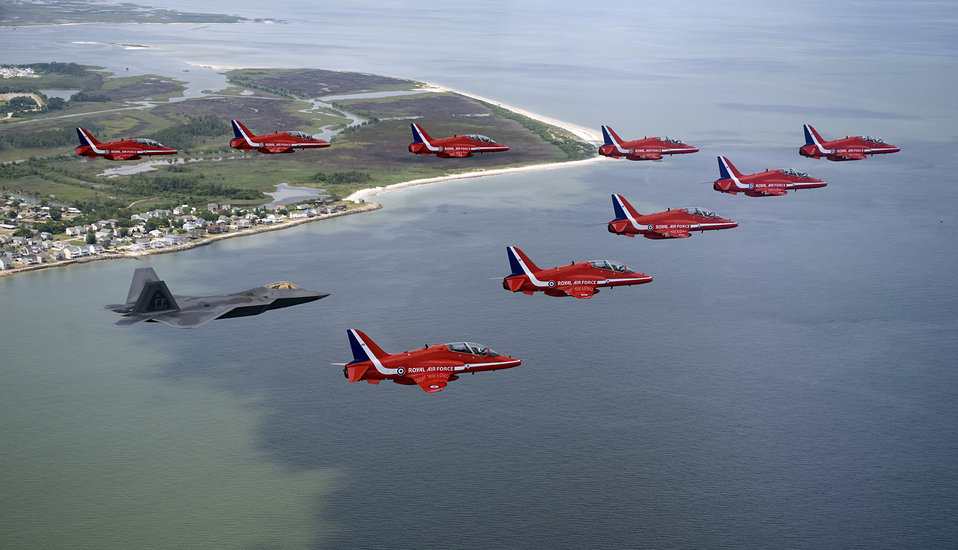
Raptor joins Red Arrows

Maj. Paul Moga flies in formation in an F-22 Raptor with the Royal Air Force Aerobatic Team, The Red Arrows, during an afternoon practice flight June 18 at Langley Air Force Base, Va. The aircraft will perform at AirPower over Hampton Roads, the Langley AFB airshow, which is scheduled for June 20 to 22. Major Moga is an F-22 Demonstration Team pilot.